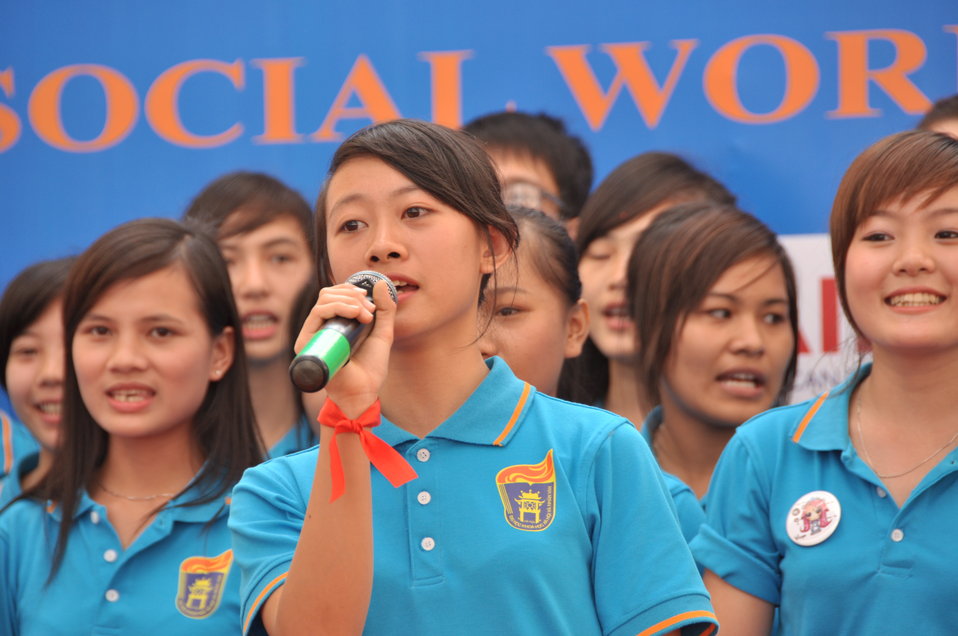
USAID Supports Social Work Education

Photo: @USAIDVietnam, November 9, 2012